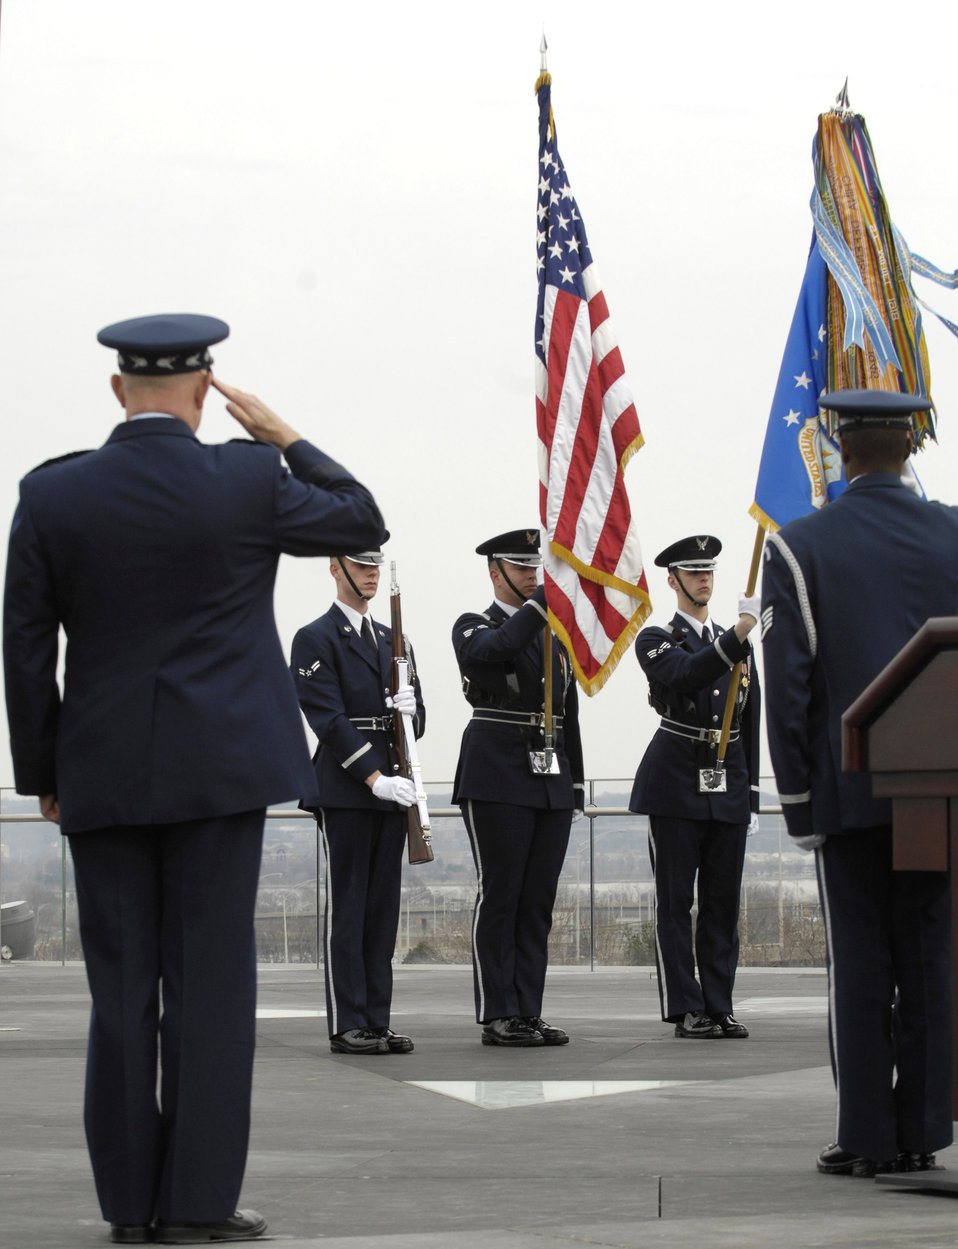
Air Force 60th Anniversary flag raised at memorial

Air Force Chief of Staff Gen. T. Michael Moseley salutes during the playing of the National Anthem during the flag-raising ceremony for the Air Force's 60th Anniversary flag at the Air Force Memorial March 1 in Arlington, Va. The flag will fly at the memorial until the Air Force's 60th birthday Sept. 18.